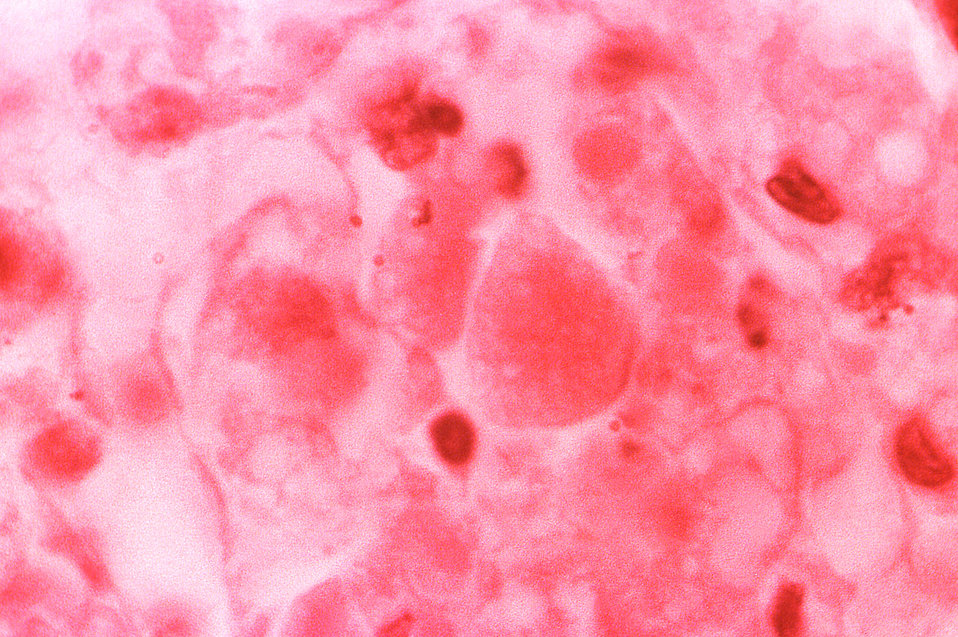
Under a high magnification of 1000X, and using an oil immersion technique to aid visualization, this hematoxylin-eosin-stained (H&E) photomicrograph depicts the cytoarchitectural changes found in a liver tissue specimen extracted from a deceased yellow fever patient. Note the 'Councilman body with some microvacuoles resulting from fatty necrosis.'. See PHIL 2176, and 8239, depicting TEMs of the yellow fever virus.